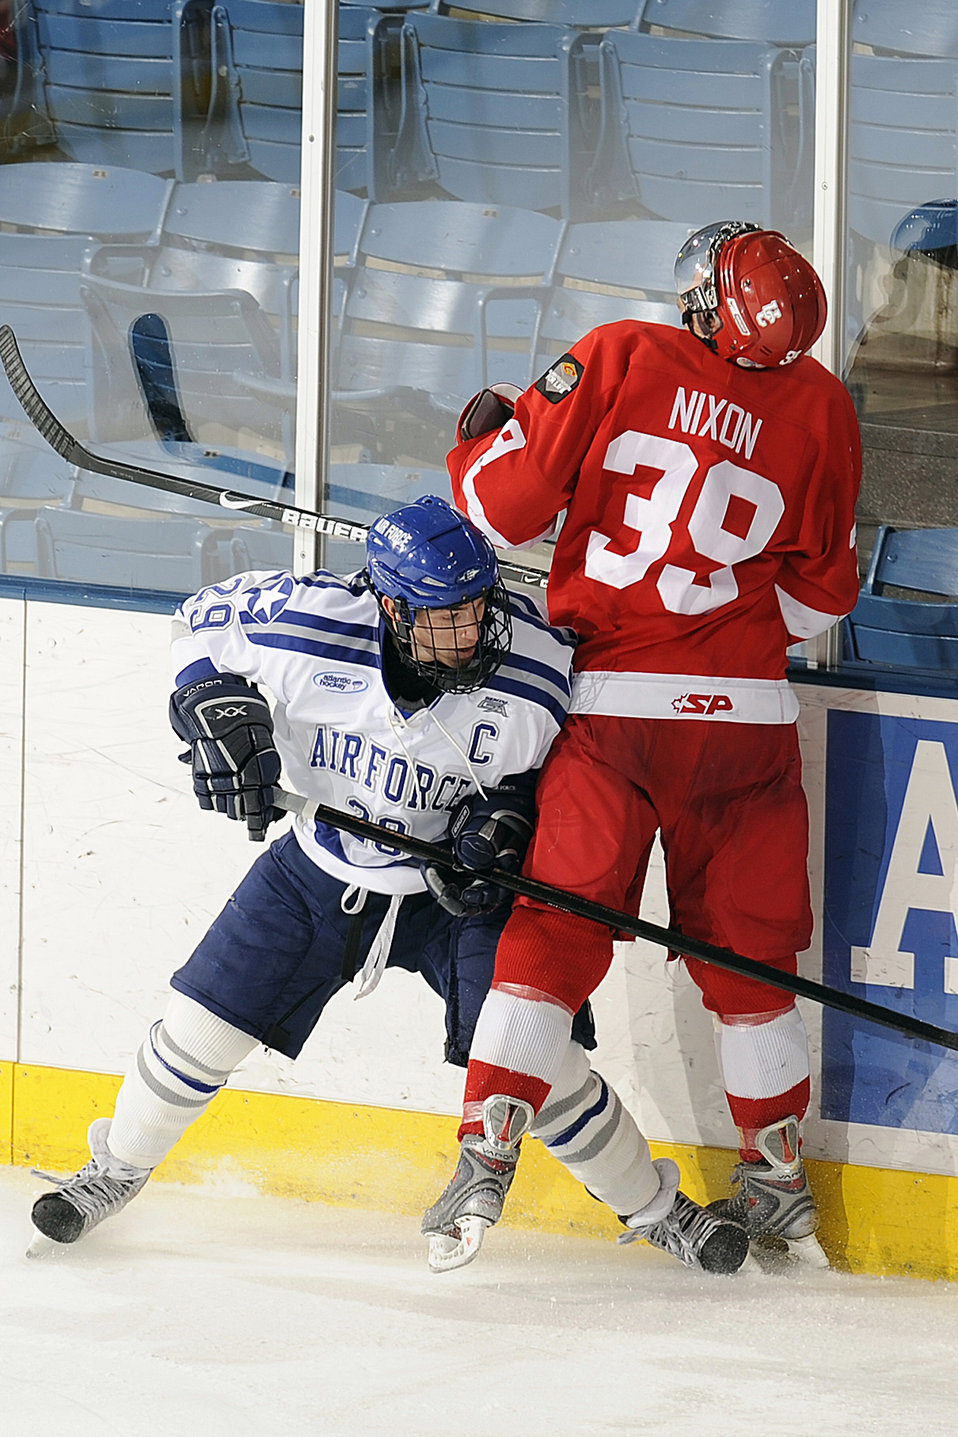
Lamoureux scores two in 3-1 win over Calgary

U.S. Air Force Academy, CO -- Senior forward Brett Nylander checks Calgary's Brock Nixon during an exhibition game between the Falcons and the Dinos at the Cadet Ice Arena Oct. 5. Air Force won the exhibition match 3-1. Air Force will play its first regular-season game at Bemidji State in Bemidji, Minn., Oct. 9.